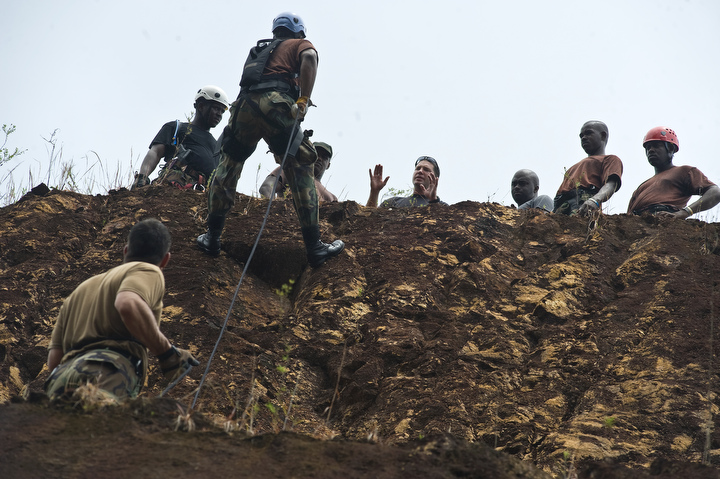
St. Lucia police team with Airmen during Operation Southern Partner

Capt. Travis Shepard (center) explains the safety precautions of rappelling to members of the Royal St. Lucia police force's special service unit June 1 during a subject matter expert exchange on mountaineering and high angle recovery procedures for Operation Southern Partner in La Toc, St. Lucia. Captain Shepard is a combat rescue officer with the 58th Rescue Squadron at Nellis Air Force Base, Nev.